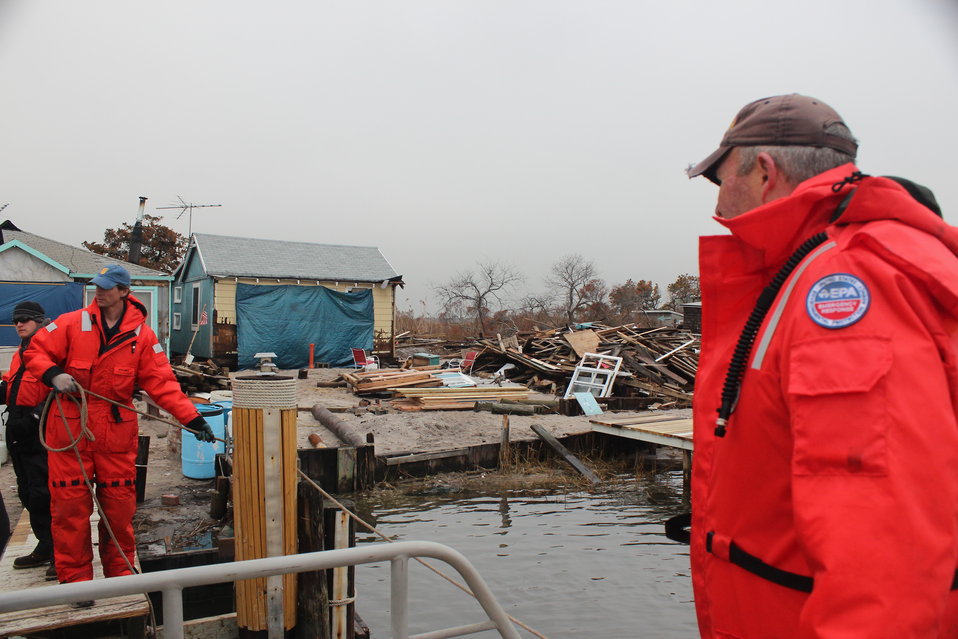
December 8, 2012 OSCs Vanderboom and Nalipinski securing a contractor boat at Whig Inlet, Suffolk County, NY

The smaller boat arrived first, providing a helping hand to tie up in preparation for collecting propane tanks, drums, and ‘Household Hazardous Waste’ from Hurricane Sandy.